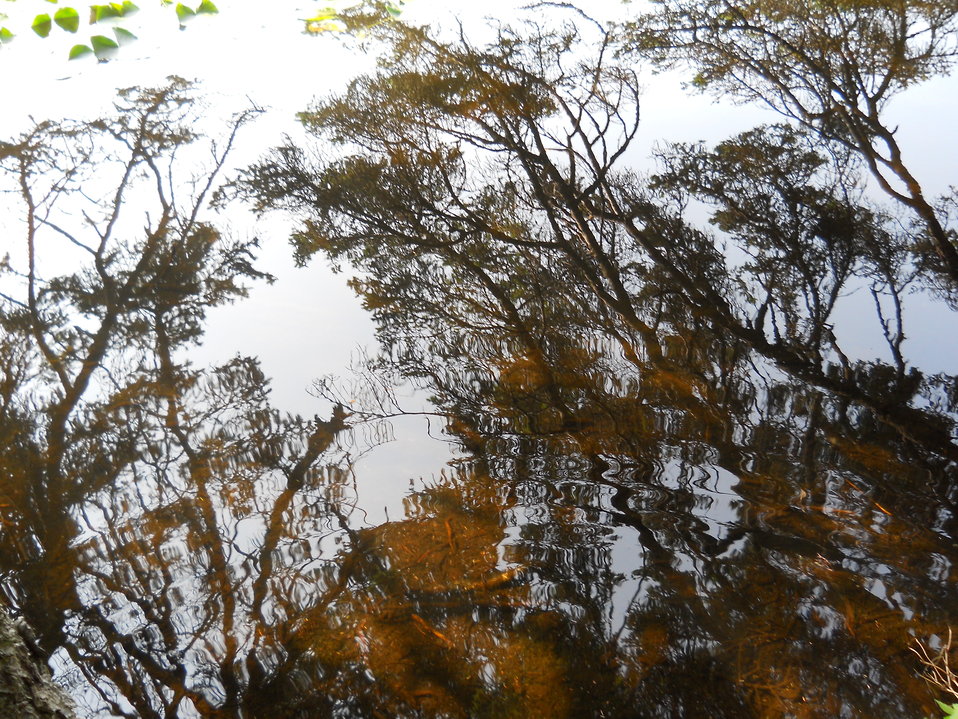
Reflections

Credit: USFWS
Photo taken by a Salmon Camp participant during a nature photography activity.

Source and Contact: Kodiak National Wildlife Refuge